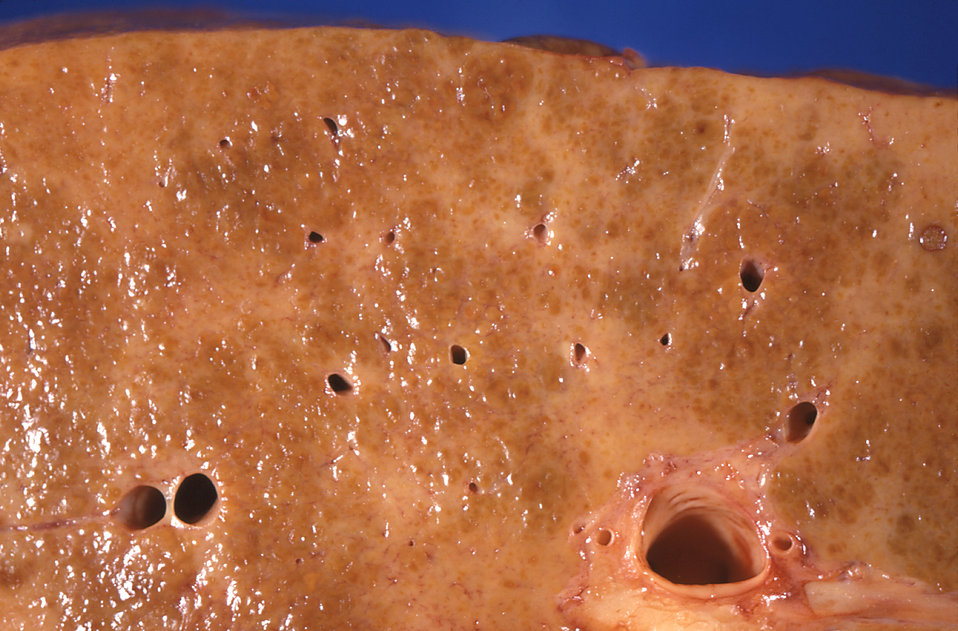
Alcoholic cirrhosis, liver